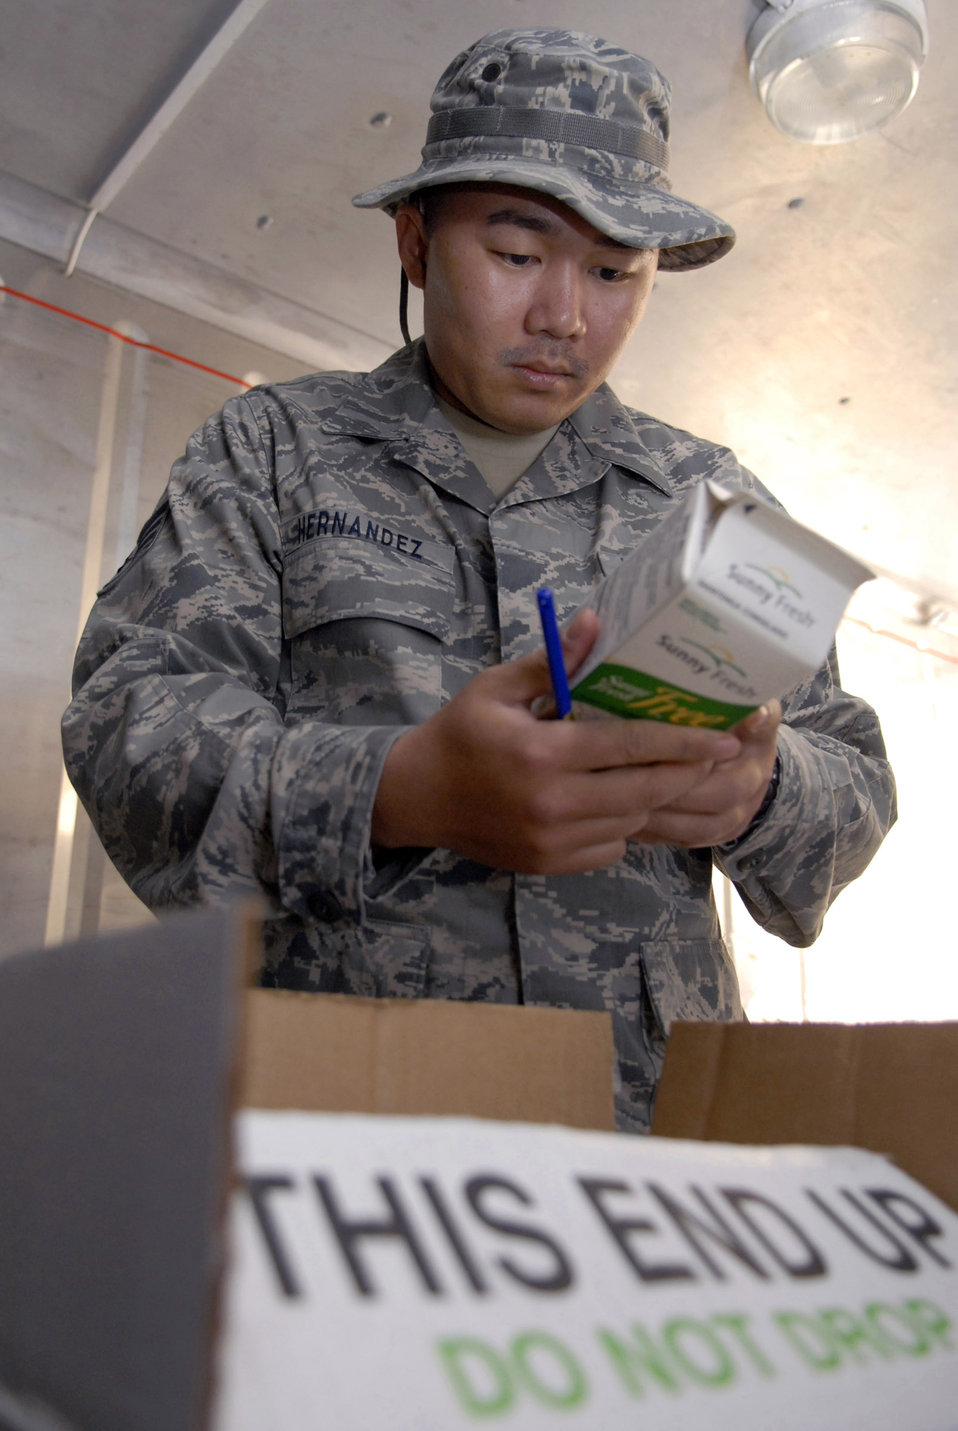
Public health maintains high standards, healthy force

Staff Sgt. Rommel Hernandez checks the expiration date on a container of egg beaters, during the monthly dining facility inspection April 18 at an air base in Southwest Asia. The public health office inspects the dining facilities, checks personnel medical records, and provides medical intelligence for forward deployers. Sergeant Hernandez is a 379th Expeditionary Medical Group public health inspector and hails from Arlington, Va. He is deployed from Keesler Air Force Base, Miss.